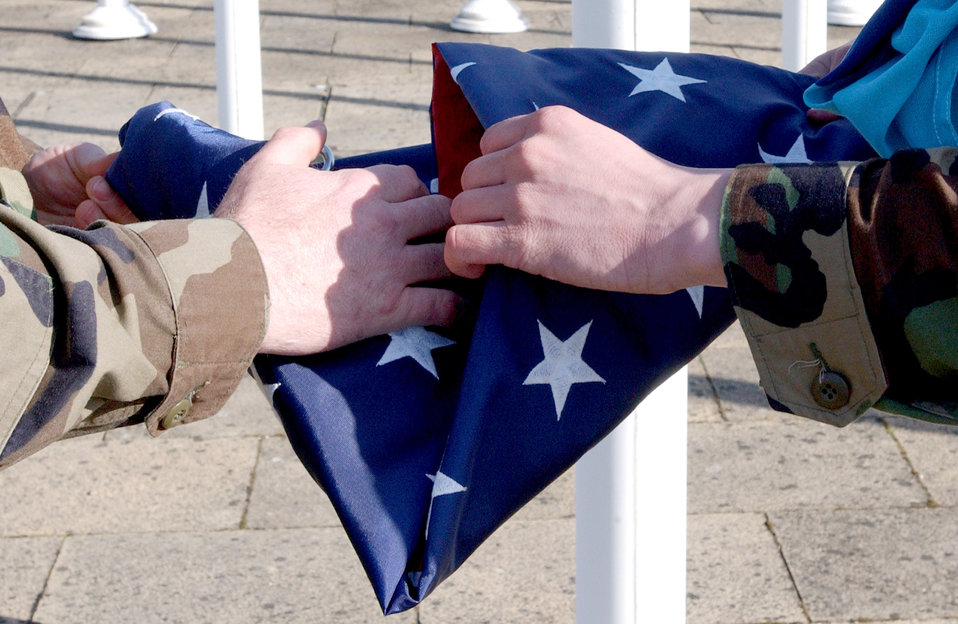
Evening retreat

ROYAL AIR FORCE MILDENHALL, England -- Army Staff Sgt. Christopher Snyder, (left), and Senior Airman Andrew Hunter fold the American flag during the evening retreat ceremony here April 5. Sergeant Snyder is an Army National Guardsman and Airman Hunter is with the 100th Security Forces Squadron.